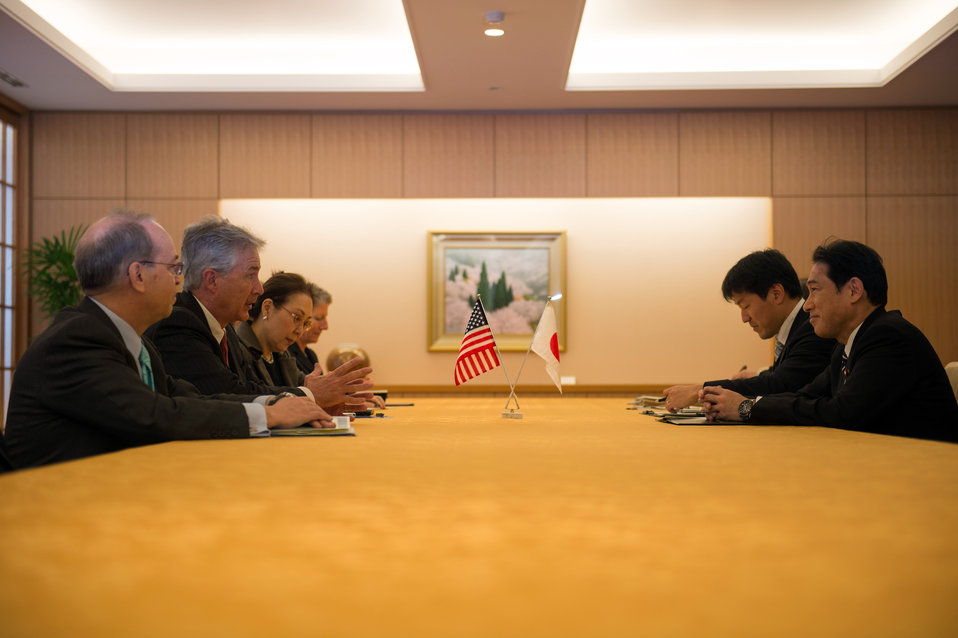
Deputy Secretary Burns Meets Japan’s Foreign Minister Kishida

U.S. Deputy Secretary of State William J. Burns, with Assistant Secretary for East Asian and Pacific Affairs Daniel R. Russel, sits down for a meeting with Japan’s Minister for Foreign Affairs Fumio Kishida in Tokyo, Japan, on January 24, 2014.